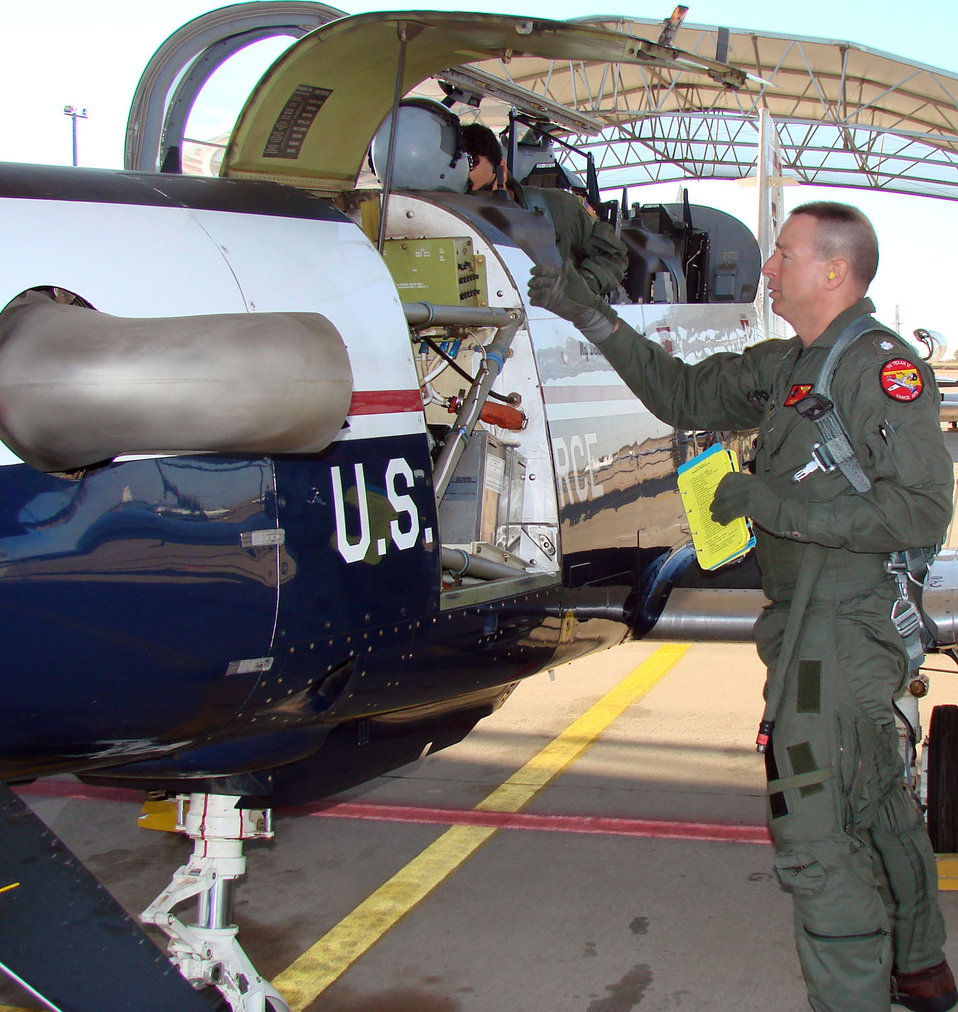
Navy officer leads AF squadron, celebrates Navy birthday

Navy Cmdr. Todd Rader preflights a T-6 Texan II aircraft Oct. 4 at Vance Air Force Base, Okla., prior to a training mission. Commander Rader, the 8th Flying Training Squadron commander, currently is the only active-duty U.S. Navy officer serving as an Air Force squadron commander in the Air Education and Training Command. Commander Rader took command of the 8th FTS in June and carries on a tradition of having a Navy officer rotate every other year as commanding officer of the unit.